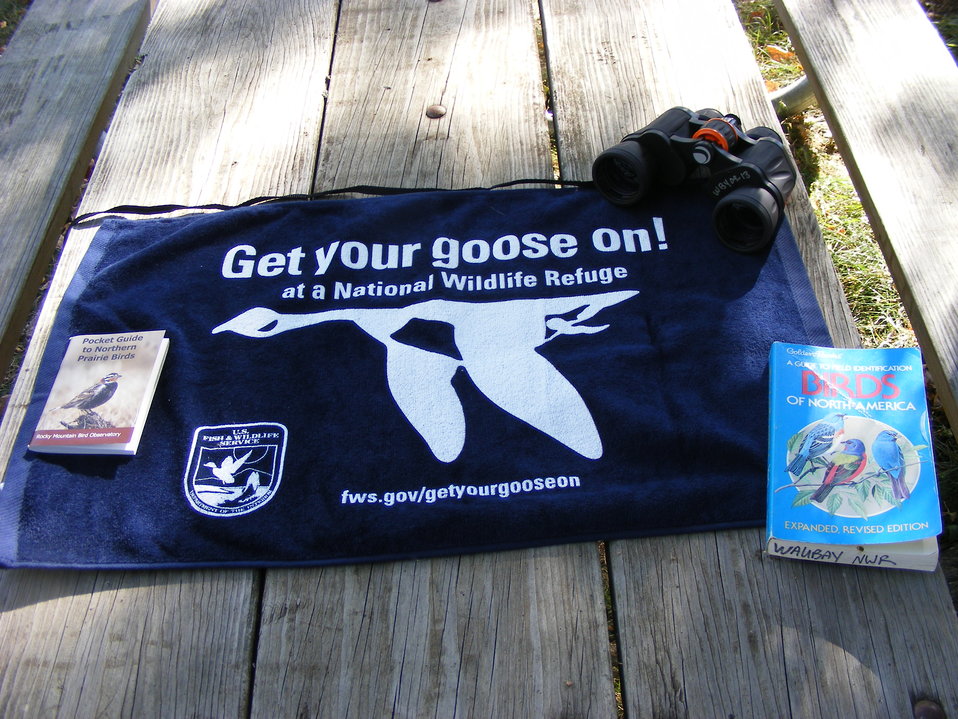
Birding - Get Your Goose On! Style